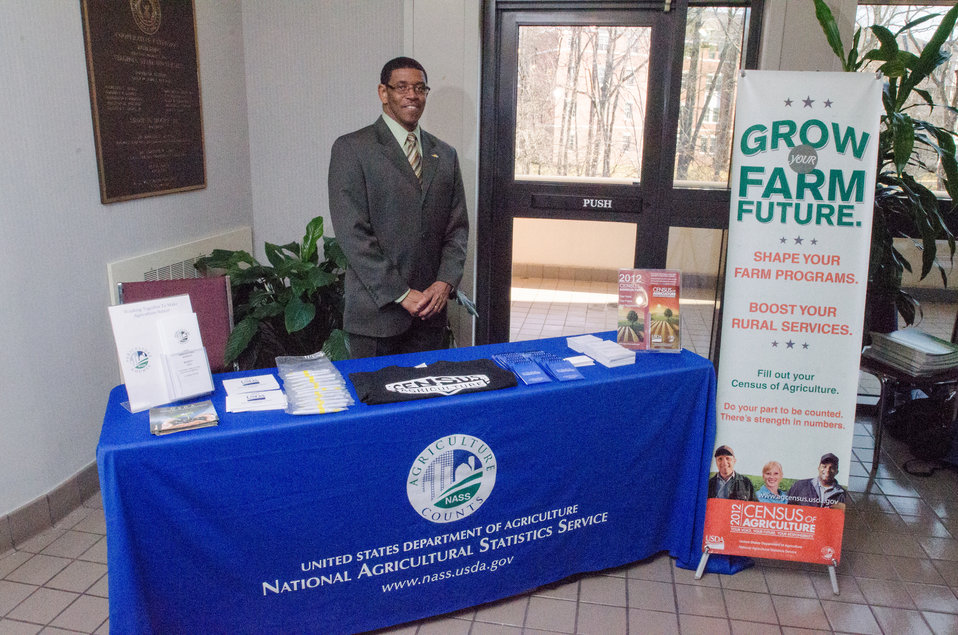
U.S. Department of Agriculture (USDA), National Agricultural Statistics Service Virginia Field Office State Statistician Herman Ellison is ready to meet farmers participating in the “Virginia State University (VSU), USDA and Virginia Farmers Working Together” outreach workshop in the VSU, L. Douglas Wilder building on Thursday, March 7, 2013, in Petersburg, VA. Farmers shared and learned new ways to do more with USDA services, and how to apply for programs that will help grow their business.